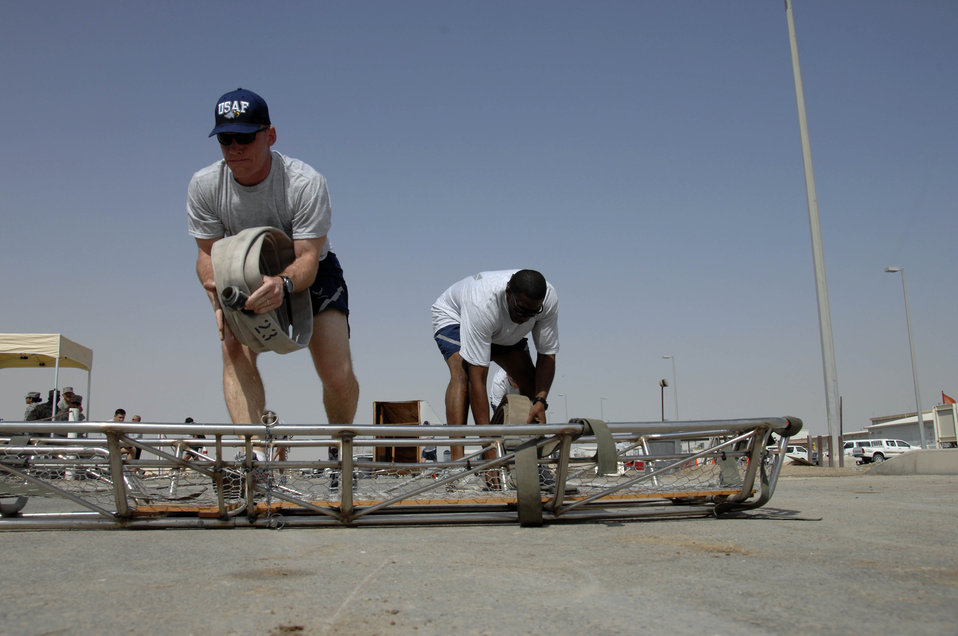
Fire muster challenges Airmen

Lieutenant Col. Virgil Cole and Tech. Sgt. Curtis Cross place rolled up fire hoses onto a stretcher during a fire muster competition March 21 at an air base in Southwest Asia. Participants in the fire muster got a small taste of the training Air Force firefighters use to keep their skills sharp and save lives. Colonel Cole is from the from the 380th Air Expeditionary Wing Safety Office, and Sergeant Cross is assigned to the 380th AEW anti-terrorism office.